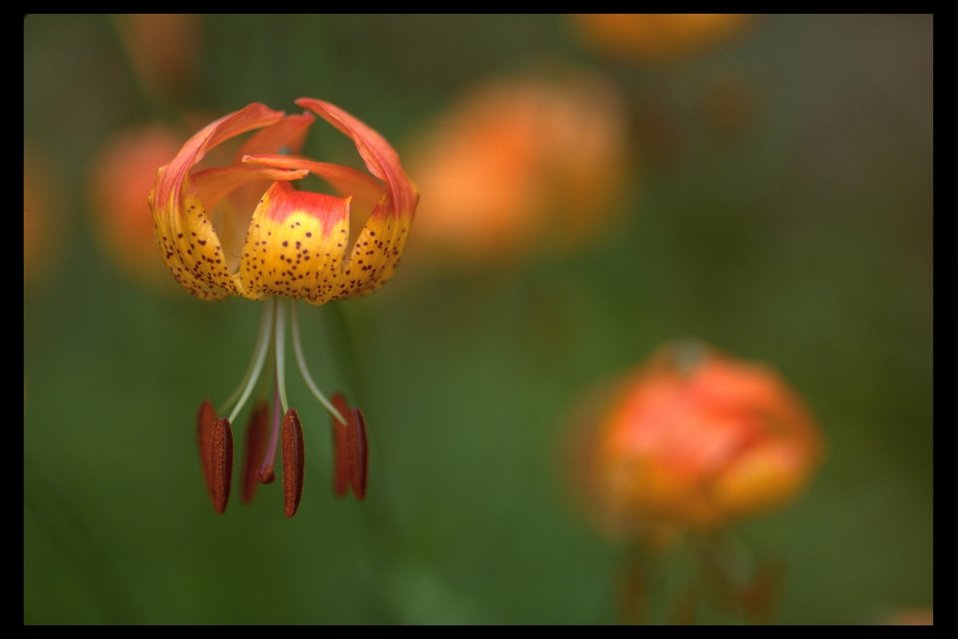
Volmer's Lily along Upper Trail Creek.